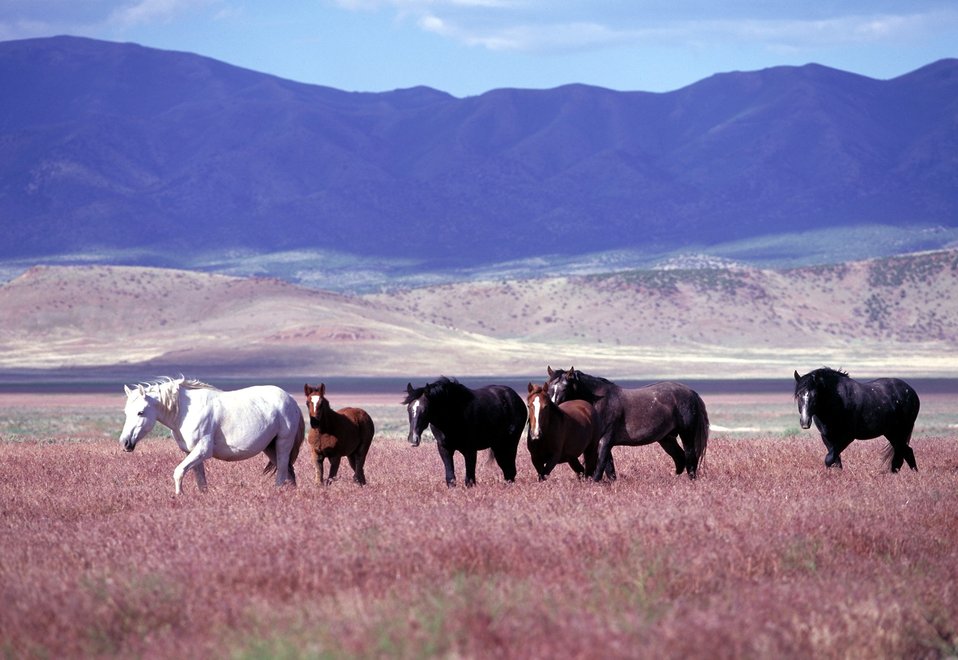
Onaqui Herd near Dugway, Utah.